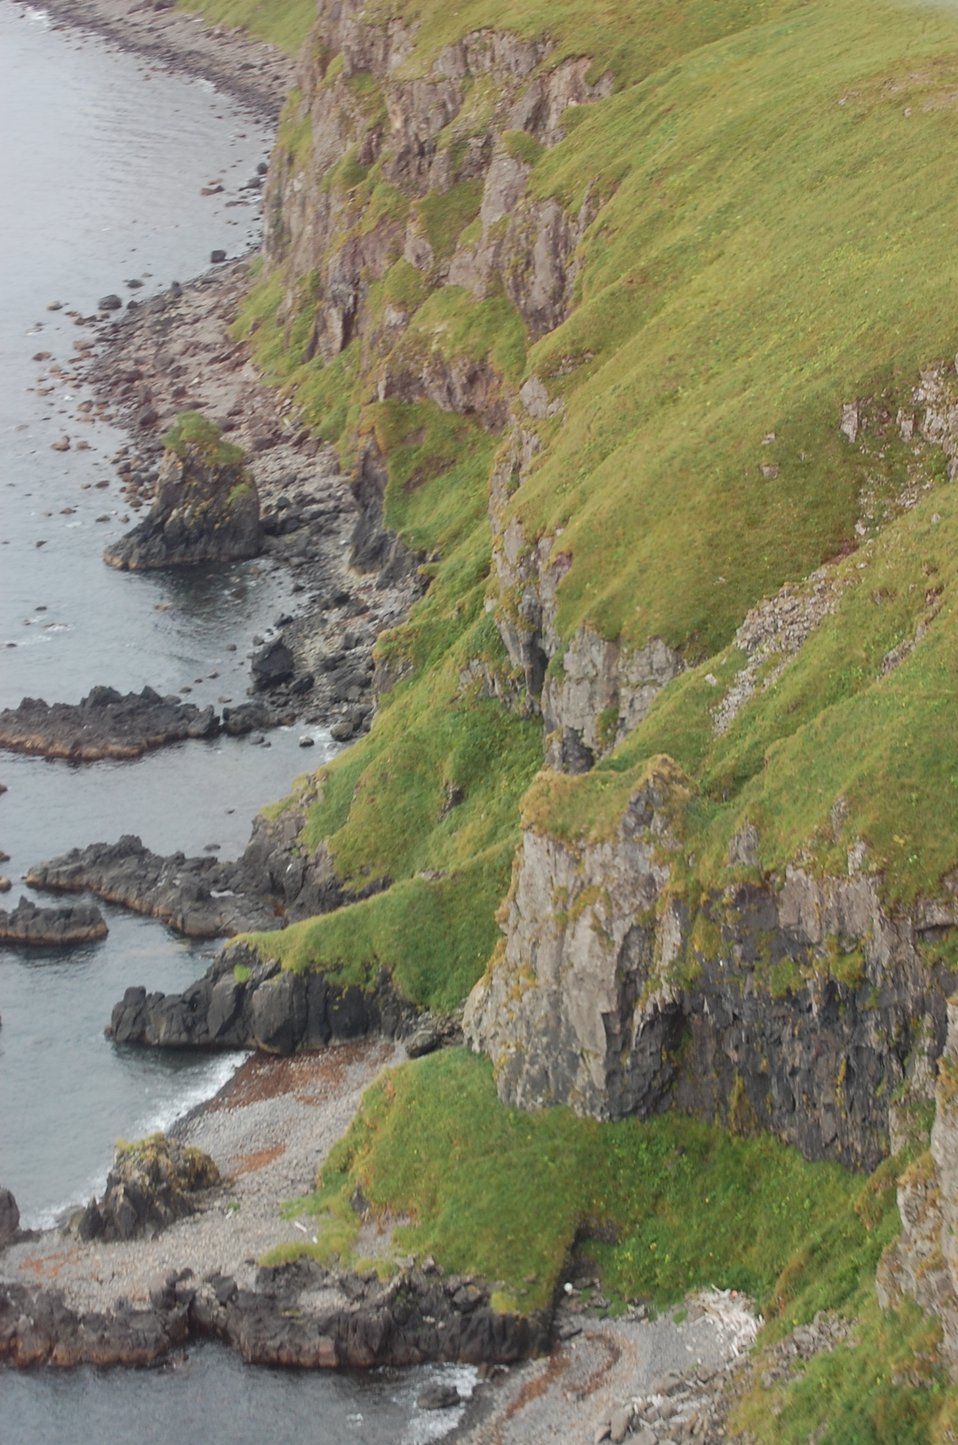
Unimak Landscapes

SE Unimak Island, Alaska Maritime National Wildlife Refuge